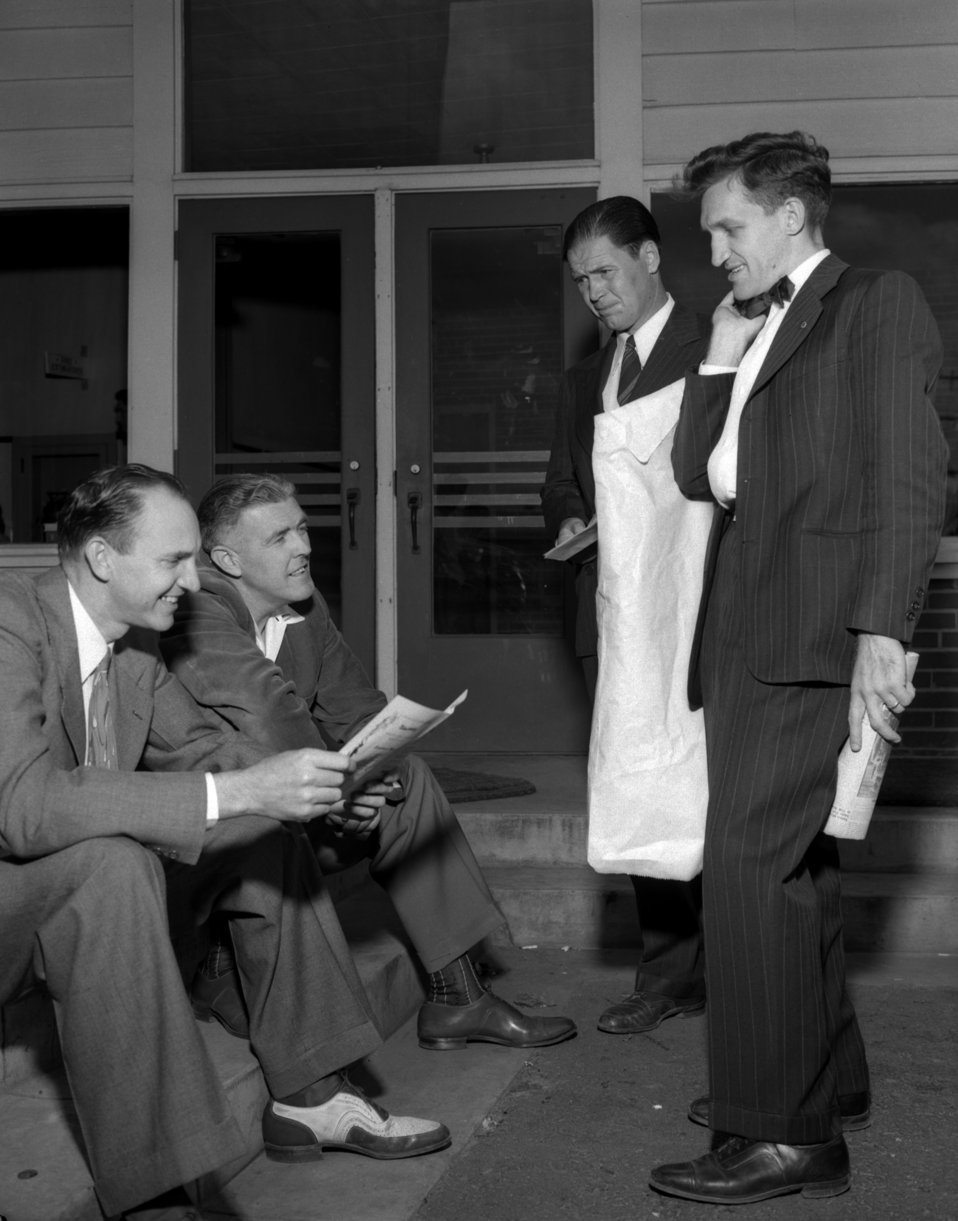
Tennessee State Band Festival Oak Ridge

004500-8m DOE photo by Ed Westcott

Tennessee State Band Festival Oak Ridge Tennessee 4/29/1948